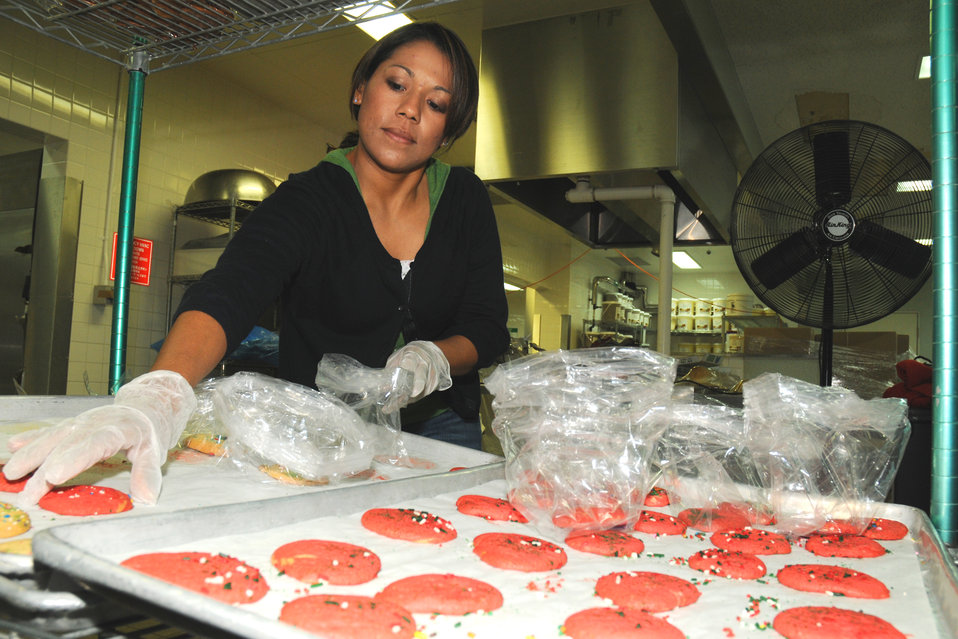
Kadena Cookie Drop

Naomi Bowlin separates cookies into individual bags Nov. 20 at the 18th Force Support Squadron's central kitchen on Kadena Air Base, Japan. Volunteers prepared more than 24,000 cookies that will be delivered to servicemembers living in the dorms here at Kadena.